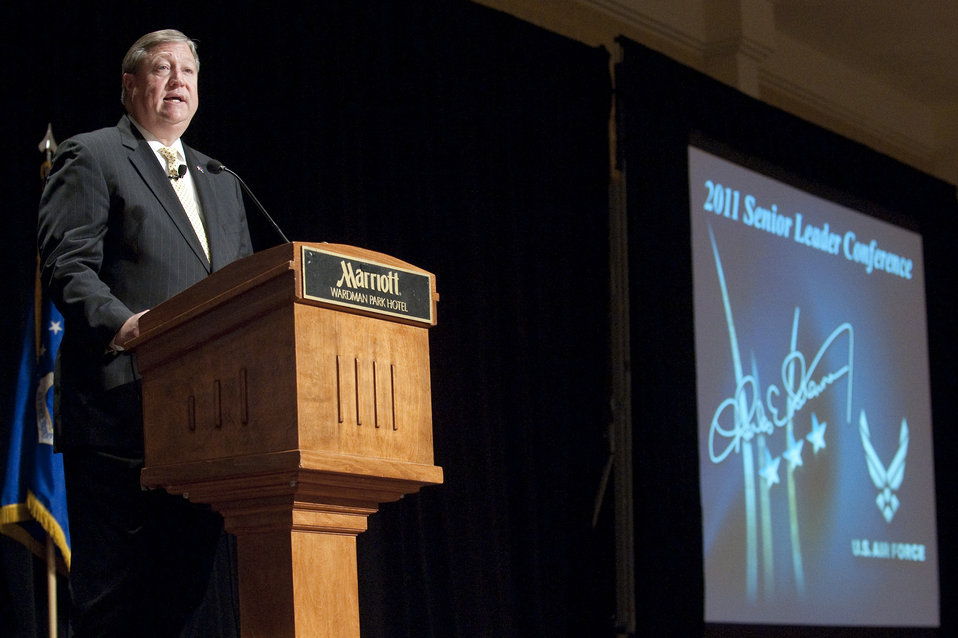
Air Force Reserve Command Senior Leader Conference

Secretary of the Air Force Michael Donley addresses Air Force Reserve Command senior leaders May 16, 2011, during their annual conference in Washington, D.C.